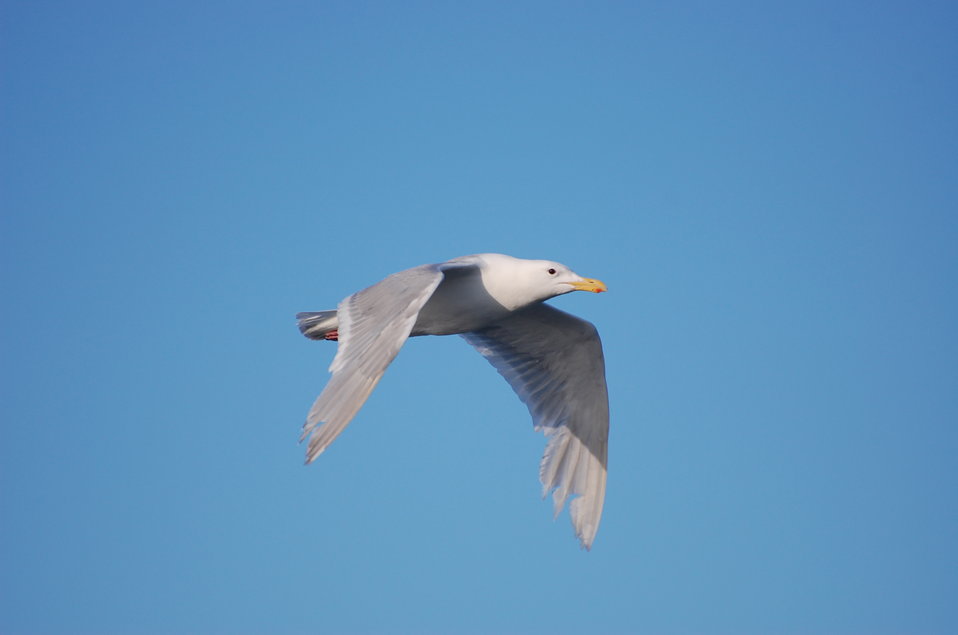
Adult Glaucous-winged Gull

Izembek National Wildlife Refuge